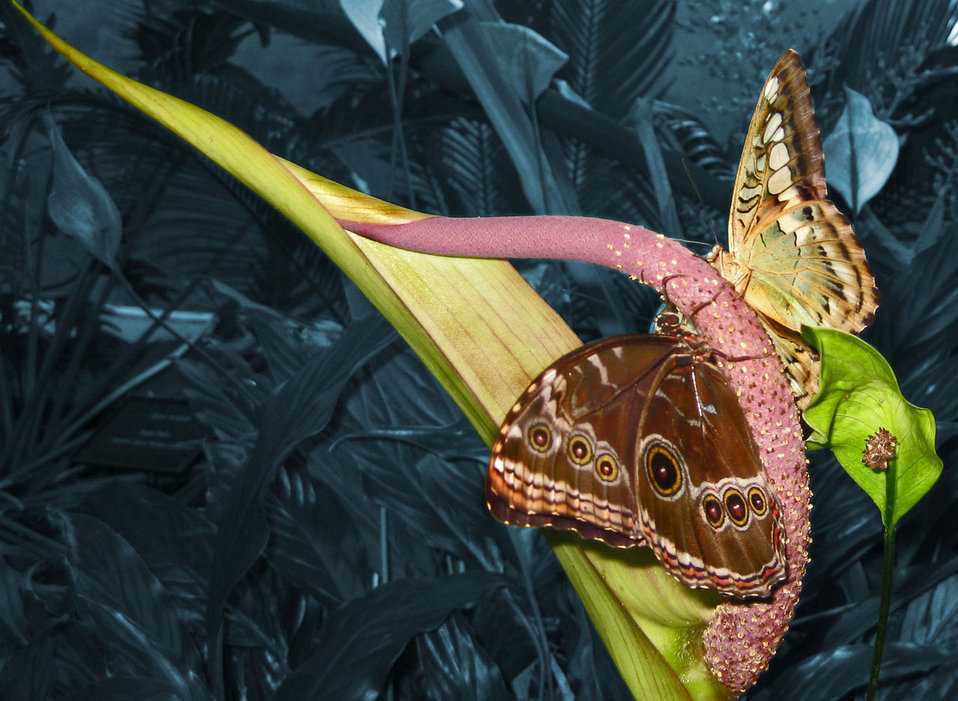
Colorized butterflies

Two colorized morpho peleides butterflies on a desaturated background.